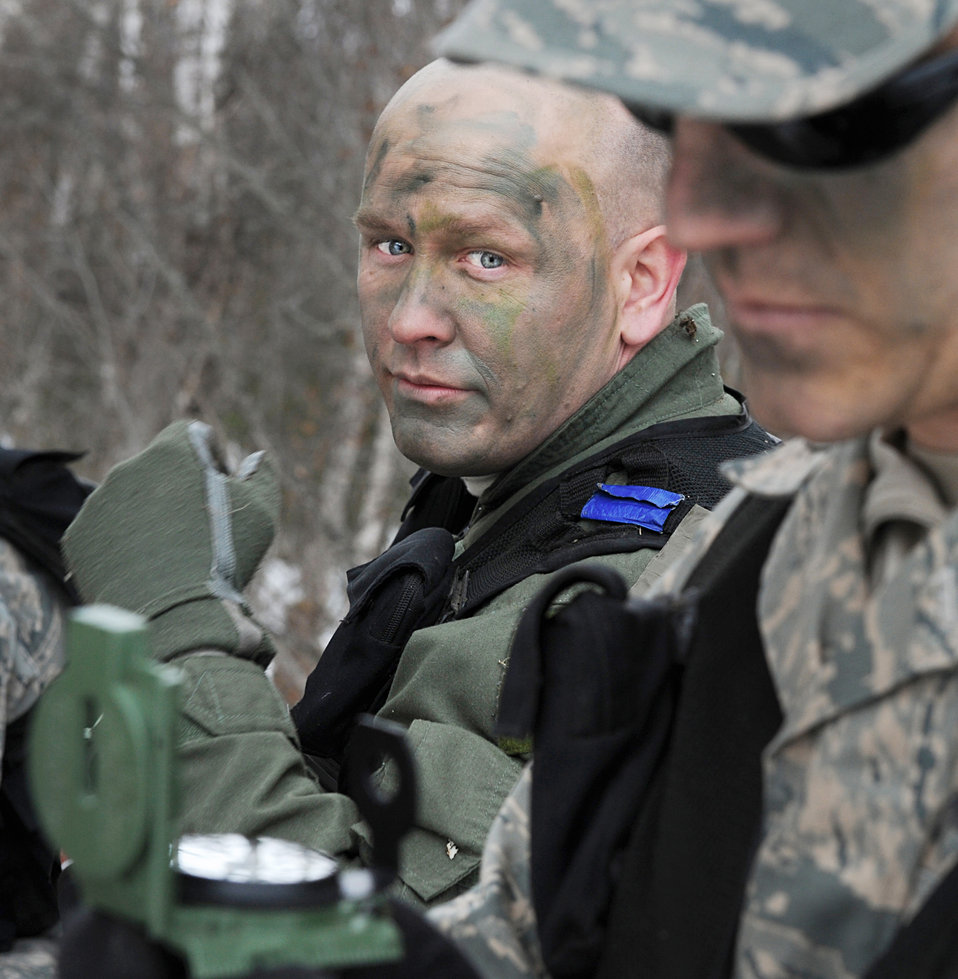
Airmen train for cold weather survival

Master Sgt. Andrew Schultz (left) watches as Capt. Andrew Hull uses the compass to guide their team during survival, evasion, resistance and escape field training April 12, 2010 at Elmendorf Air Force Base, Alaska. Captain Hull is an airborne surveillance officer and Sergeant Schultz is a communications system operator, both are with the 962nd Airborne Air Control Squadron.